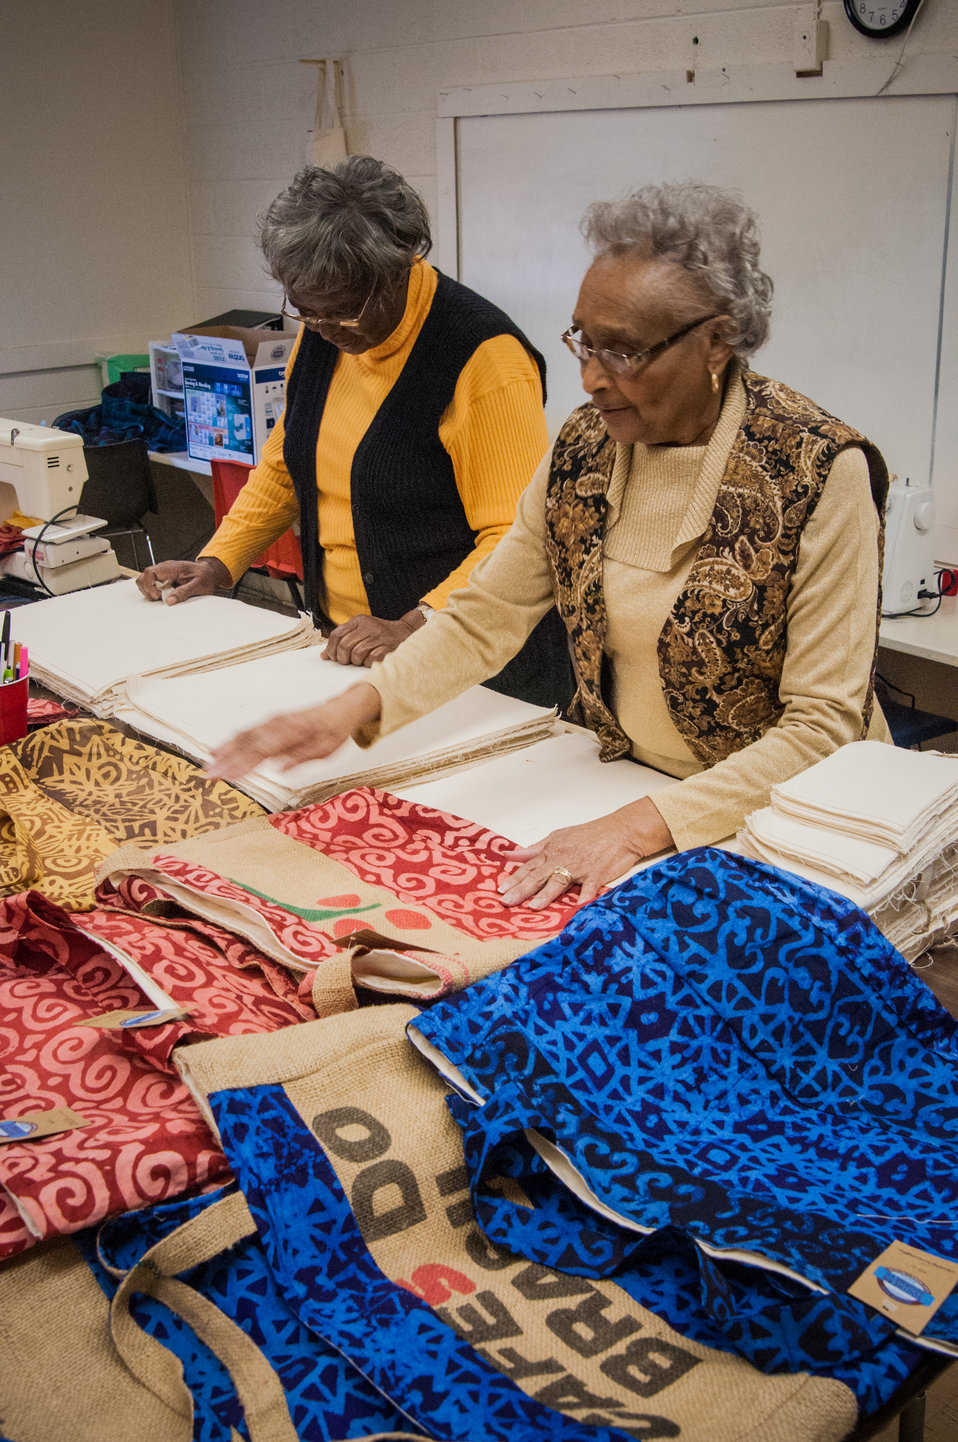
Mollie Hawkins and Mattie Vaughan work on a hand bags in the sewing room at the East Baker Historical Society Community Center in Newton, Baker County, GA on Mar. 7, 2013. The East Baker Historical Society Community Center secured a U.S. Department of Agriculture (USDA) Rural Development (RD) Community Facilities (CF) Loan for the kitchen that enabled residents to prepare catered meals and to prepare and package food products. The USDA Strike Force Initiative has designated Baker County, GA as a Strike Force county selected to receive assistance to relieve persistent poverty in historically high-poverty counties.